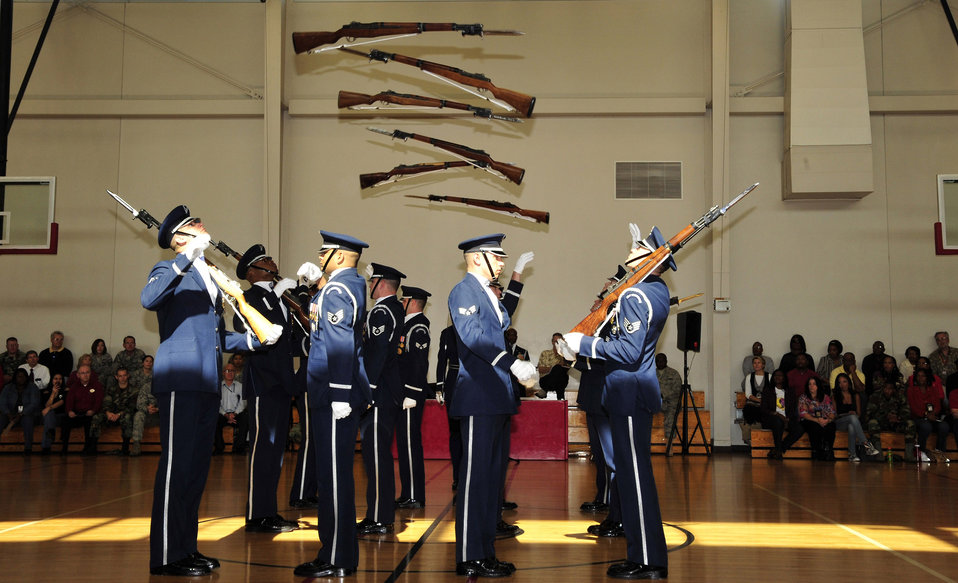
High-flying precision

Members of the U. S. Air Force Honor Guard Drill Team perform Nov. 19 during Air Force Week - Los Angeles at the Space and Missile Systems Center, Los Angeles Air Force Base, Calif. Air Force Week serves as the premier platform to share the Air Force story with the American public.